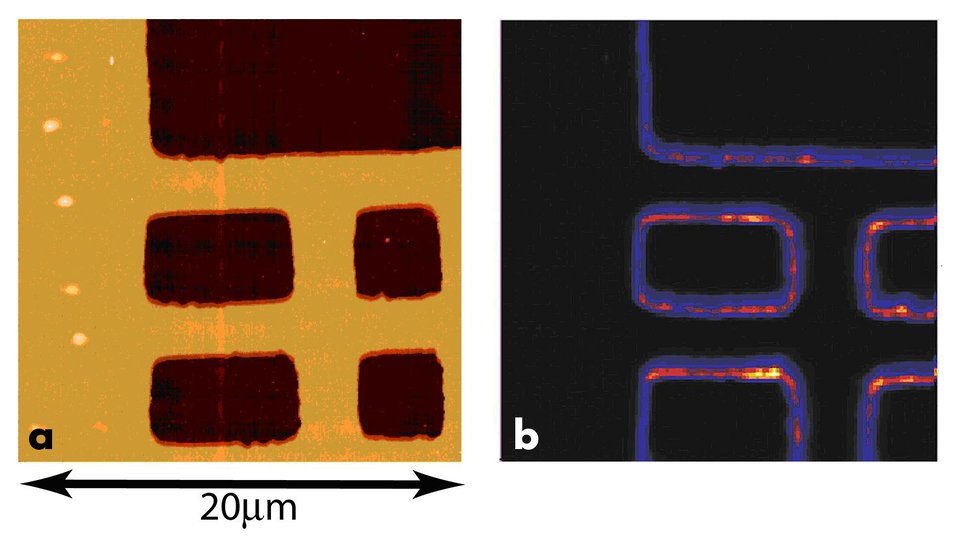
Microscopy, Scanning Photoionization Imagery, SPIM Image

A false color SPIM image (b) reveals the same physical structure of a gold pattern on glass as an atomic force microscope image (a), but the high intensity regions in the SPIM image indicate that electron ejection is much more efficient at metal edge discontinuities.